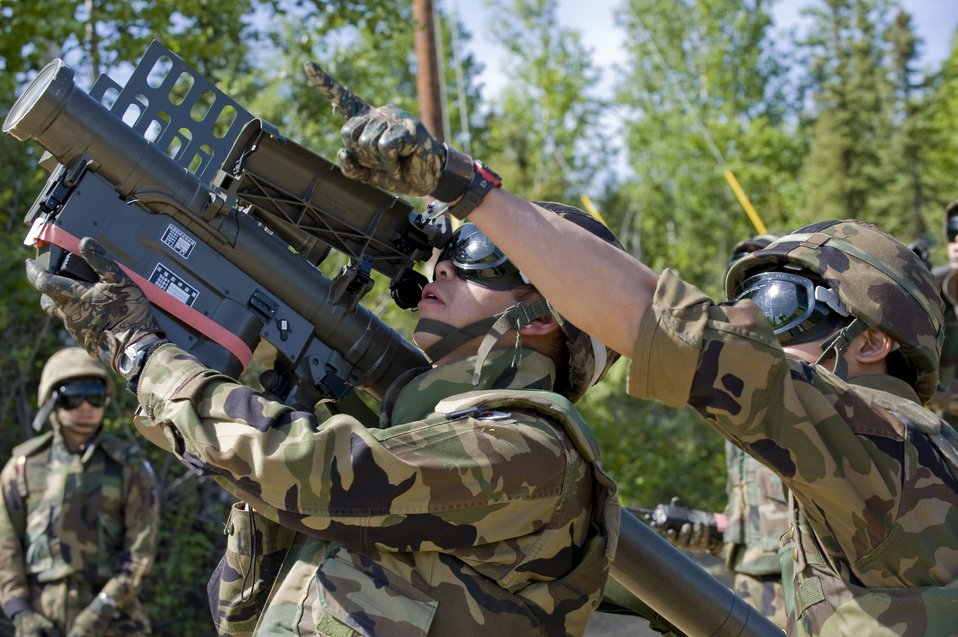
Aim just over there!

Staff Sgt. Masayuki Inomata aims a surface-to-air missile launcher at